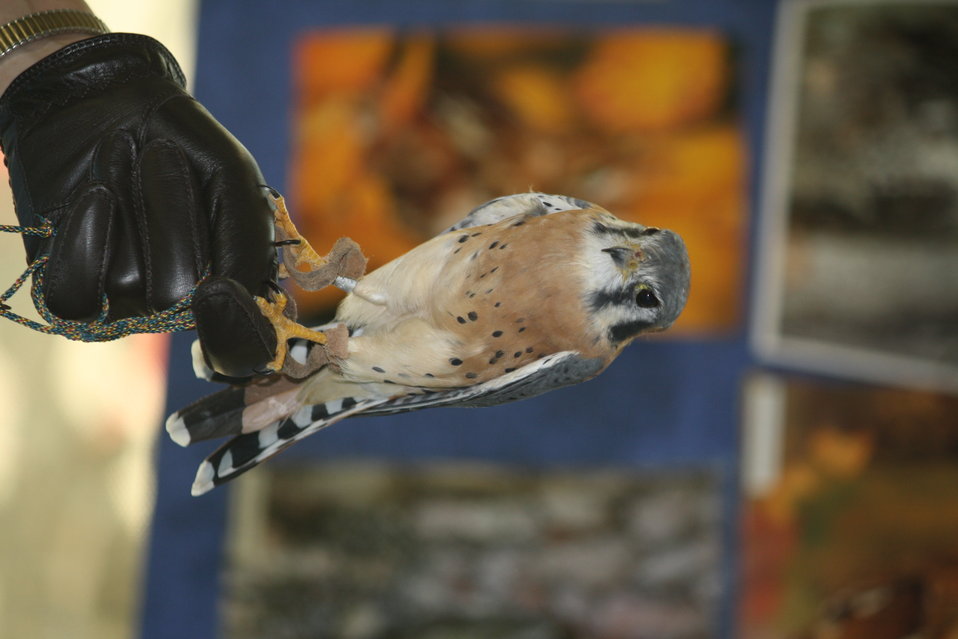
Patuxent Research Refuge 75th Anniversary

American kestrel